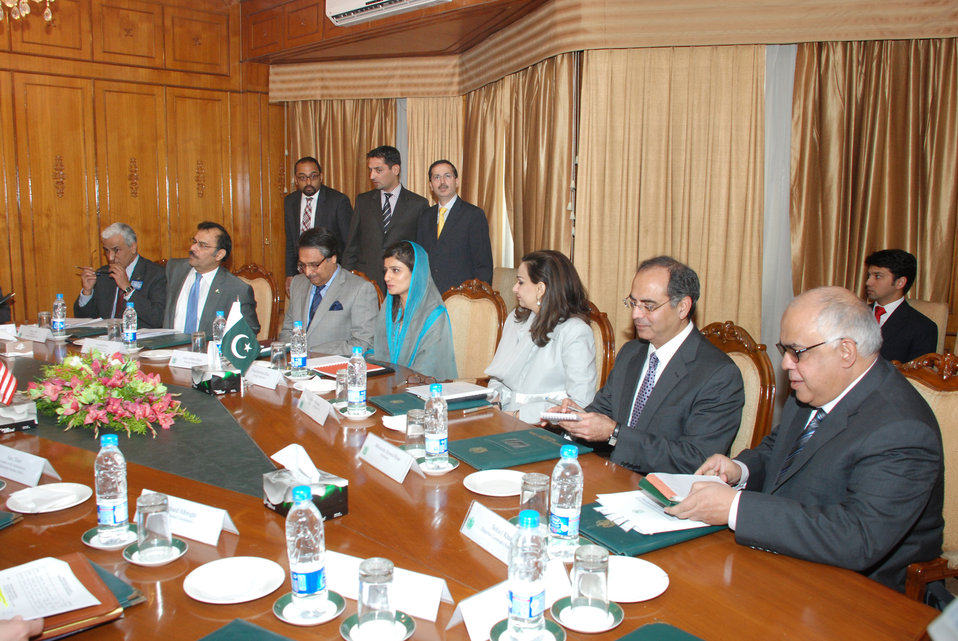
US officials Meeting with Minister of Foreign Affairs, Assistance to Pakistan Remains Strong at Islamabad on April 14, 2012